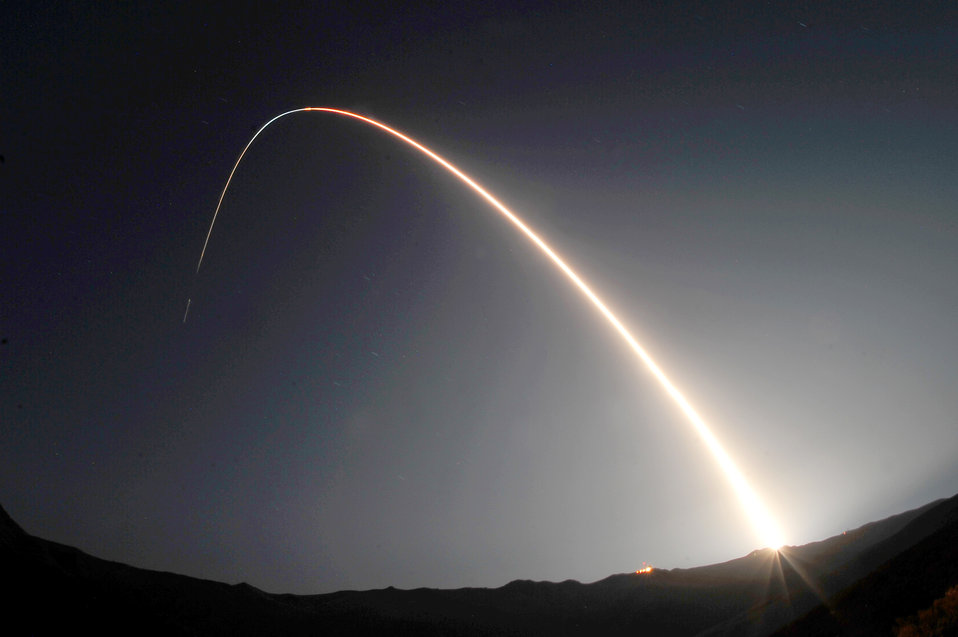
Minotaur IV

Officials launched a Minotaur IV rocket Sept. 25, 2010, at Vandenberg Air Force Base, Calif. The Minotaur IV launched the Space-Based Space Surveillance satellite, a first-of-its-kind satellite that can detect and track orbiting space objects from space.